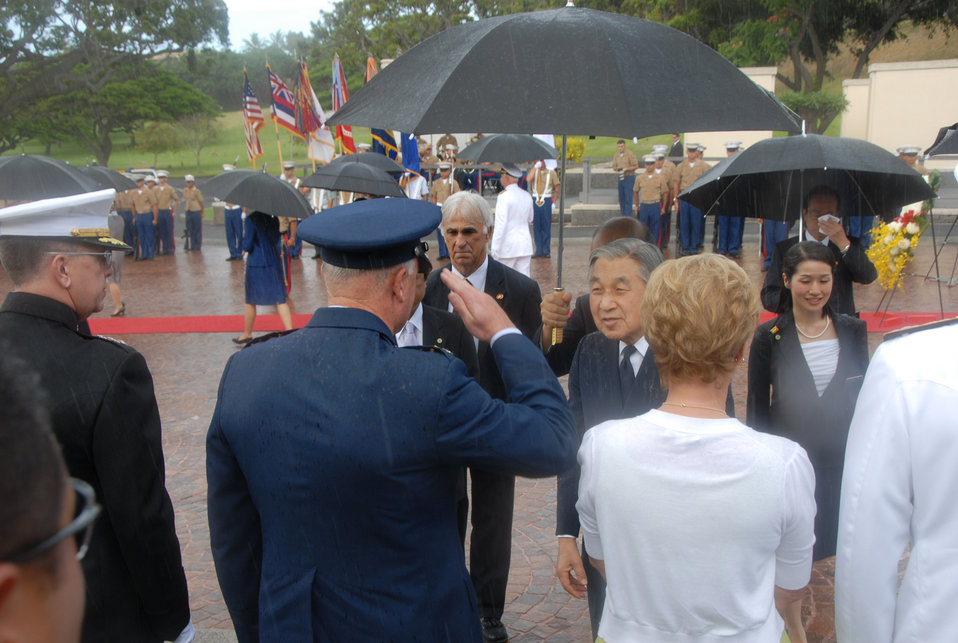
Japanese royalty honors America's fallen

Gen. Howie Chandler, Pacific Air Forces commander, greets Emperor Akihito, Emperor of Japan, during a visit July 15 to the National Memorial Cemetery of the Pacific at Punchbowl Crater, Hawaii. The Emperor and his wife, Empress Michiko, paid homage to those interred at the cemetary by laying a wreath. More than 50,000 service men and women are interred at the cemetery.